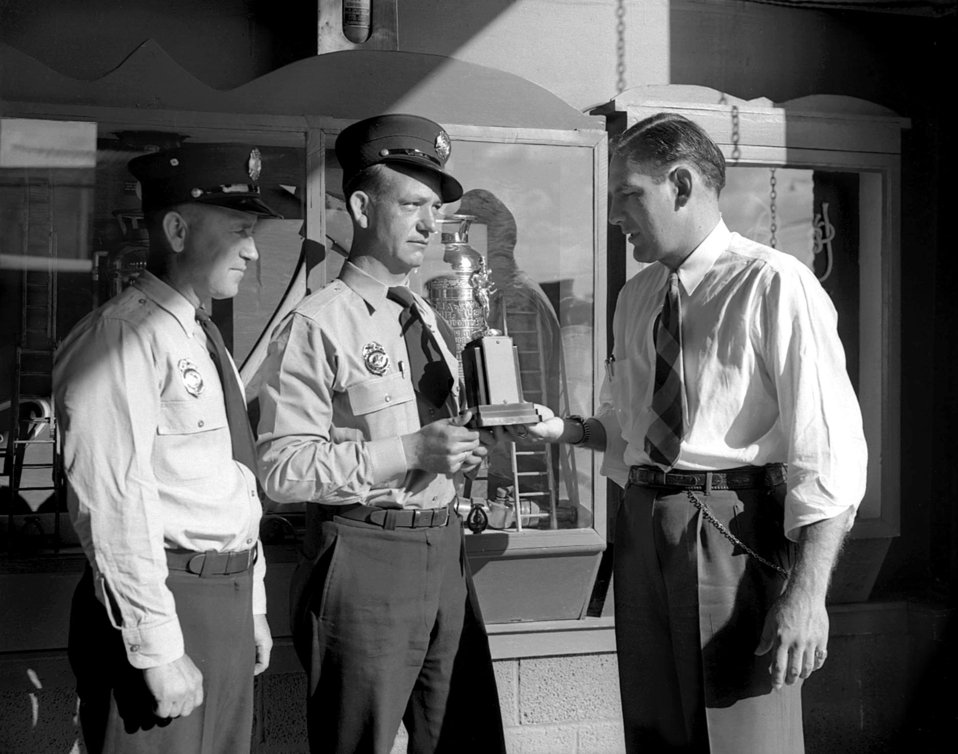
Fire Department Award Oak Ridge

004481-a DOE Photo by Ed Westcott

Oak Ridge Tennessee 4/1/1948